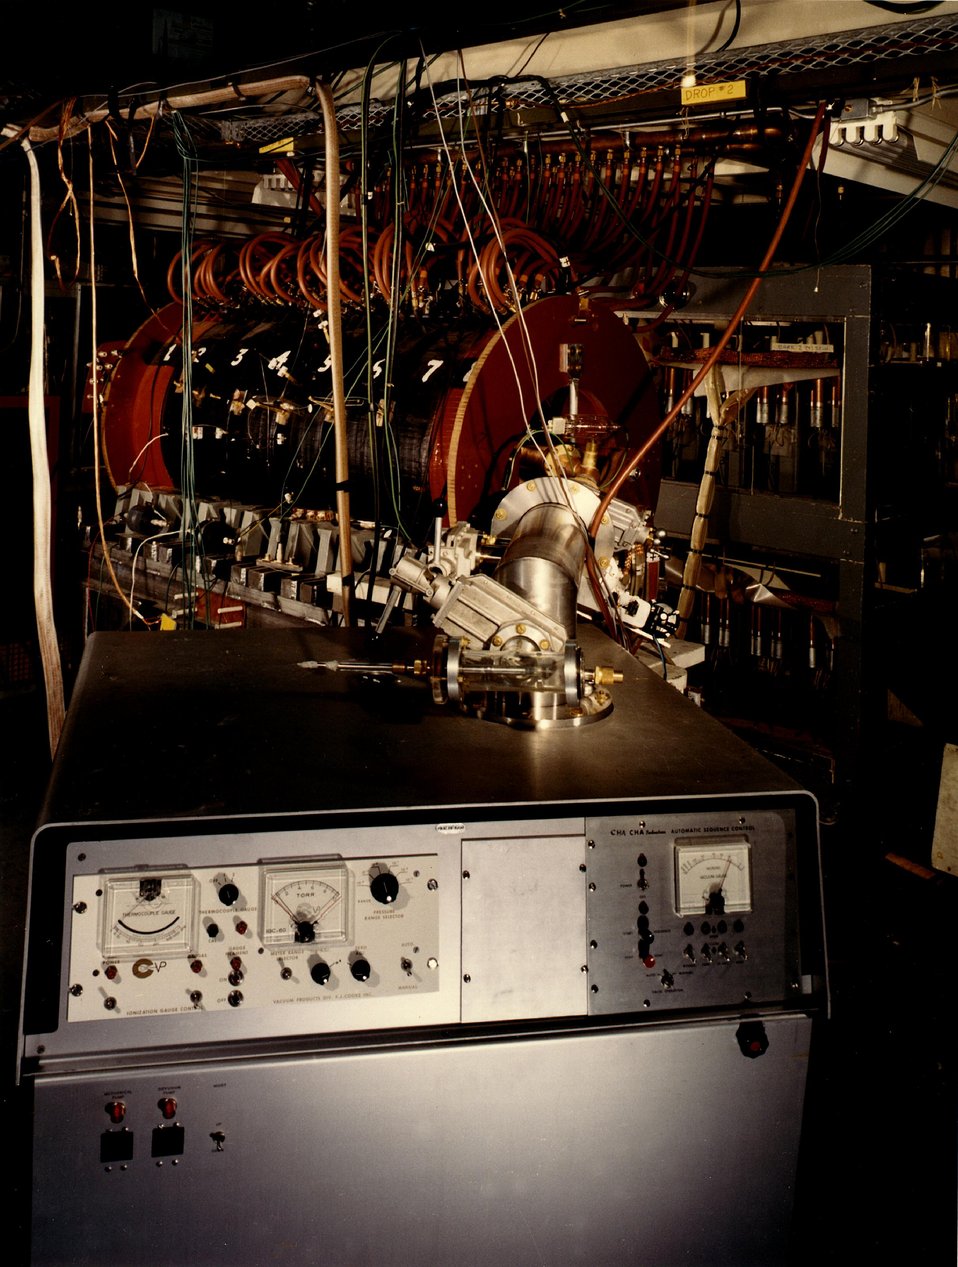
Linear Hard Core Pinch Machine Sherwood Project.